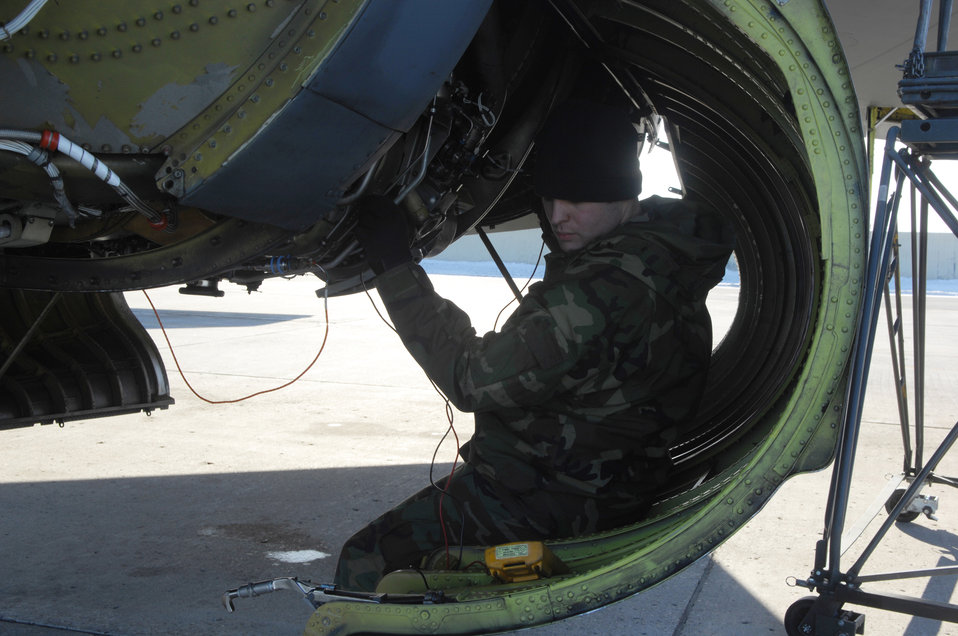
Fuel test

Staff Sgt. Justin Mcnichols' checks one of the engines of a B-52 Stratofortress Jan. 19 at Minot Air Force Base, N.D. The engines are being tested to measure the difference between using traditional JP-8 fuel verses a synthetic fuel. The bomber is being used to test alternative fuels.